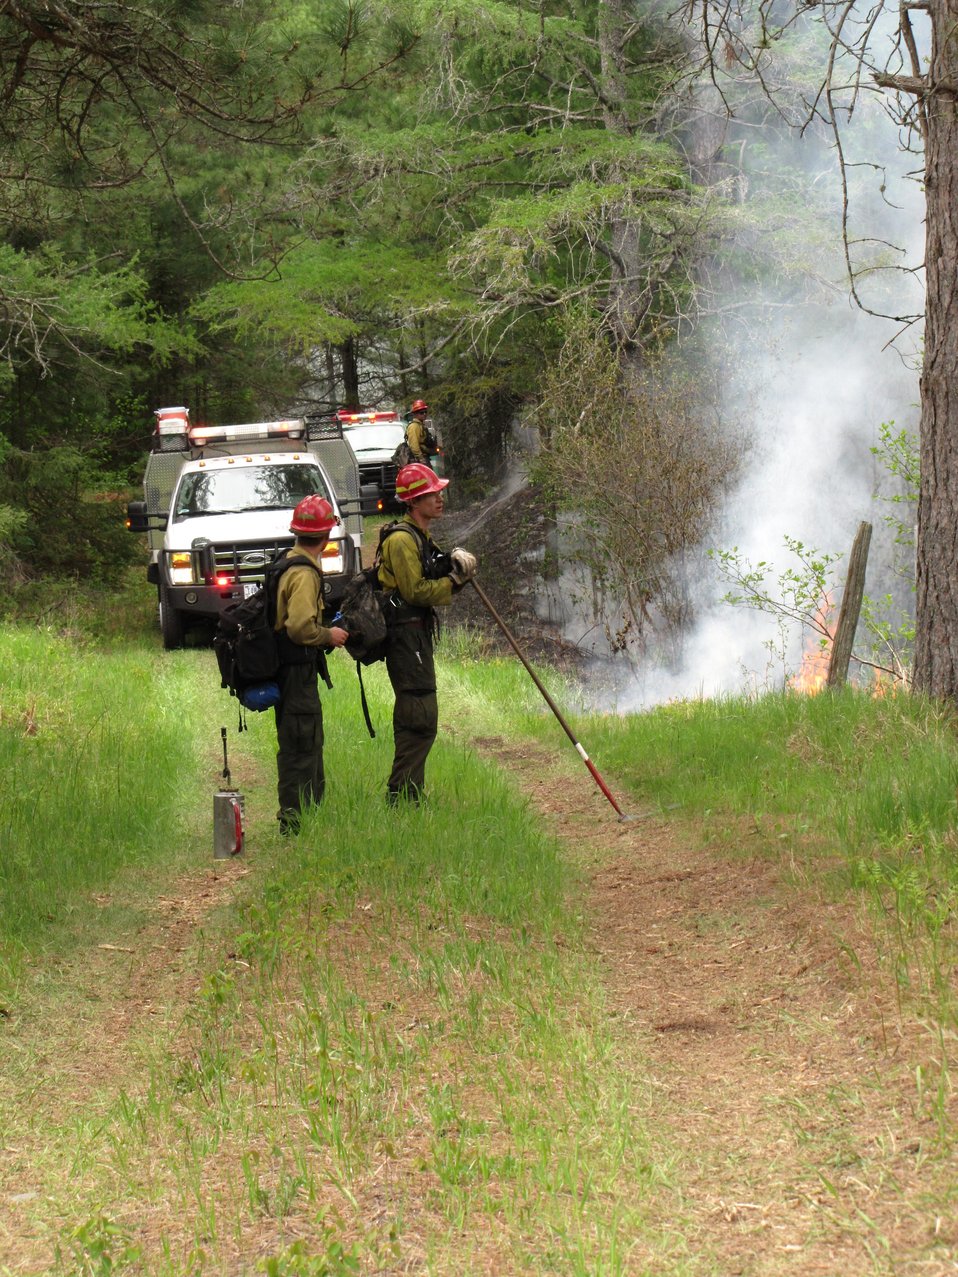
The Hand Crew

Lighting a back fire off Pine Creek Road to keep the main fire contained.